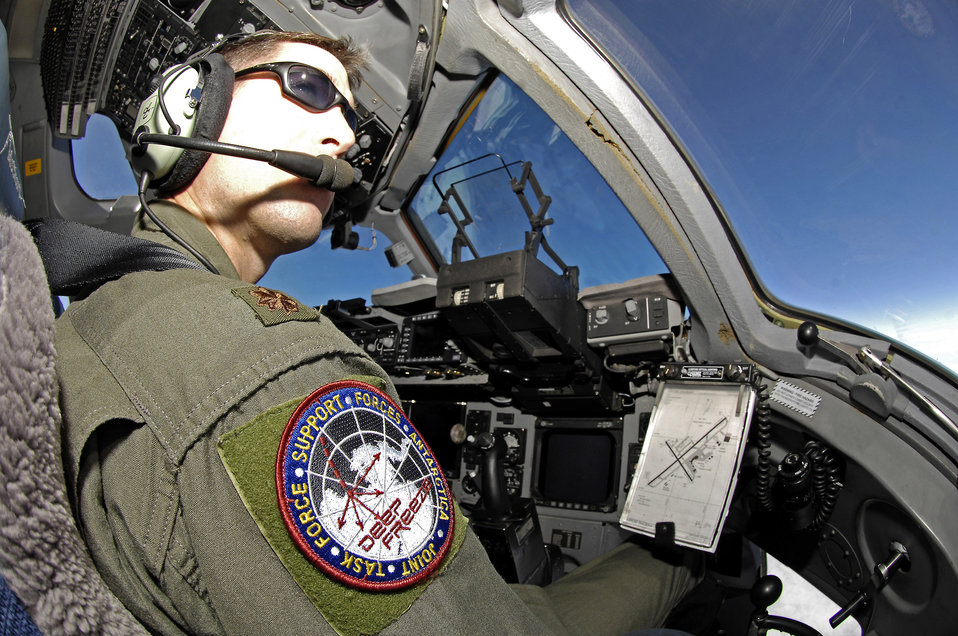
Cool delivery

Maj. Jason Allen looks out over the ice as he delivers more than 64,000 pounds of supplies and equipment to Antarctica Sept. 10. The cargo movement was conducted by Joint Task Force Support Forces Antarctica, headquartered at Hickam Air Force Base, Hawaii, and led by 13th Air Force. The joint task force is currently conducting Operation Deep Freeze in support of the National Science Foundation and U.S. Antarctic Program. Major Allen is a Reserve C-17 evaluator pilot with the 97th Airlift Squadron at McChord AFB, Wash.,